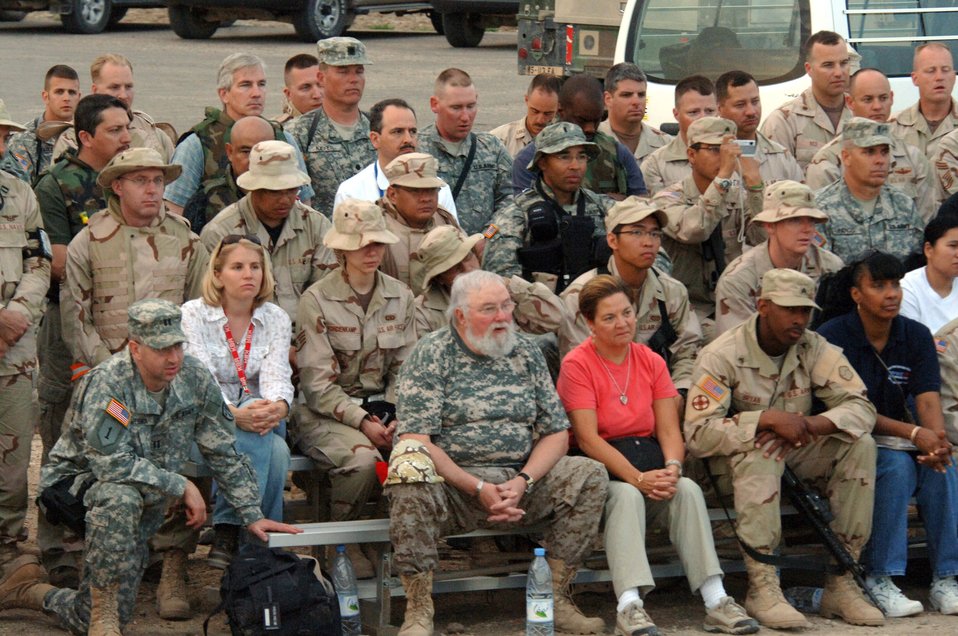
Easter services in an ancient land

Charlie Daniels (center) and members of his band attend Easter service at the House of Abraham in Ur, Iraq, along with servicemembers from Ali Base, Iraq, on Sunday, April 16, 2006. Abraham is considered by religious scholars to be the father of three religions: Islam, Judaism and Christianity. Mr. Daniels and his band are on tour entertaining troops throughout the region.